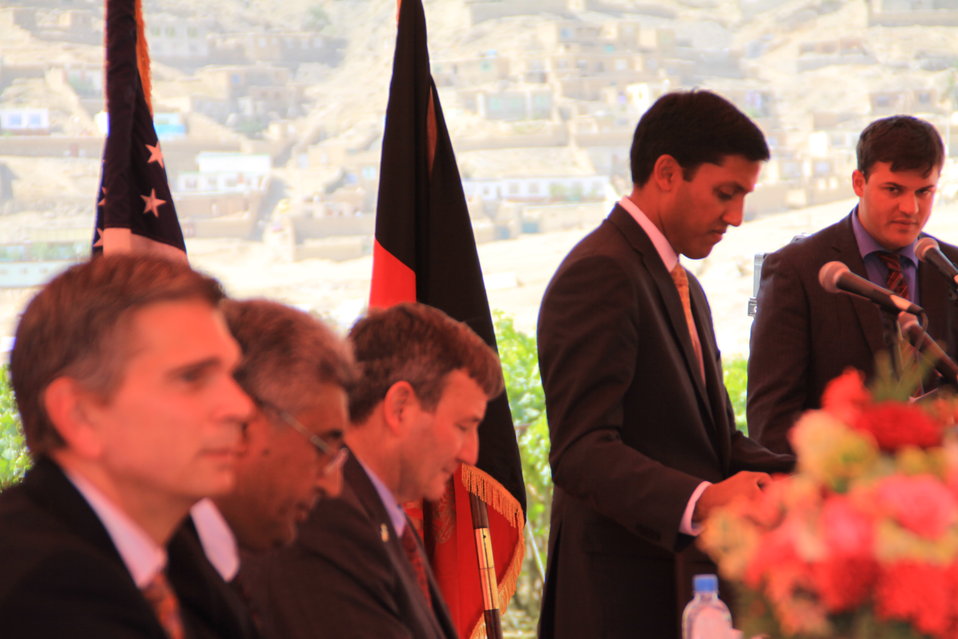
Badam Bagh Farm